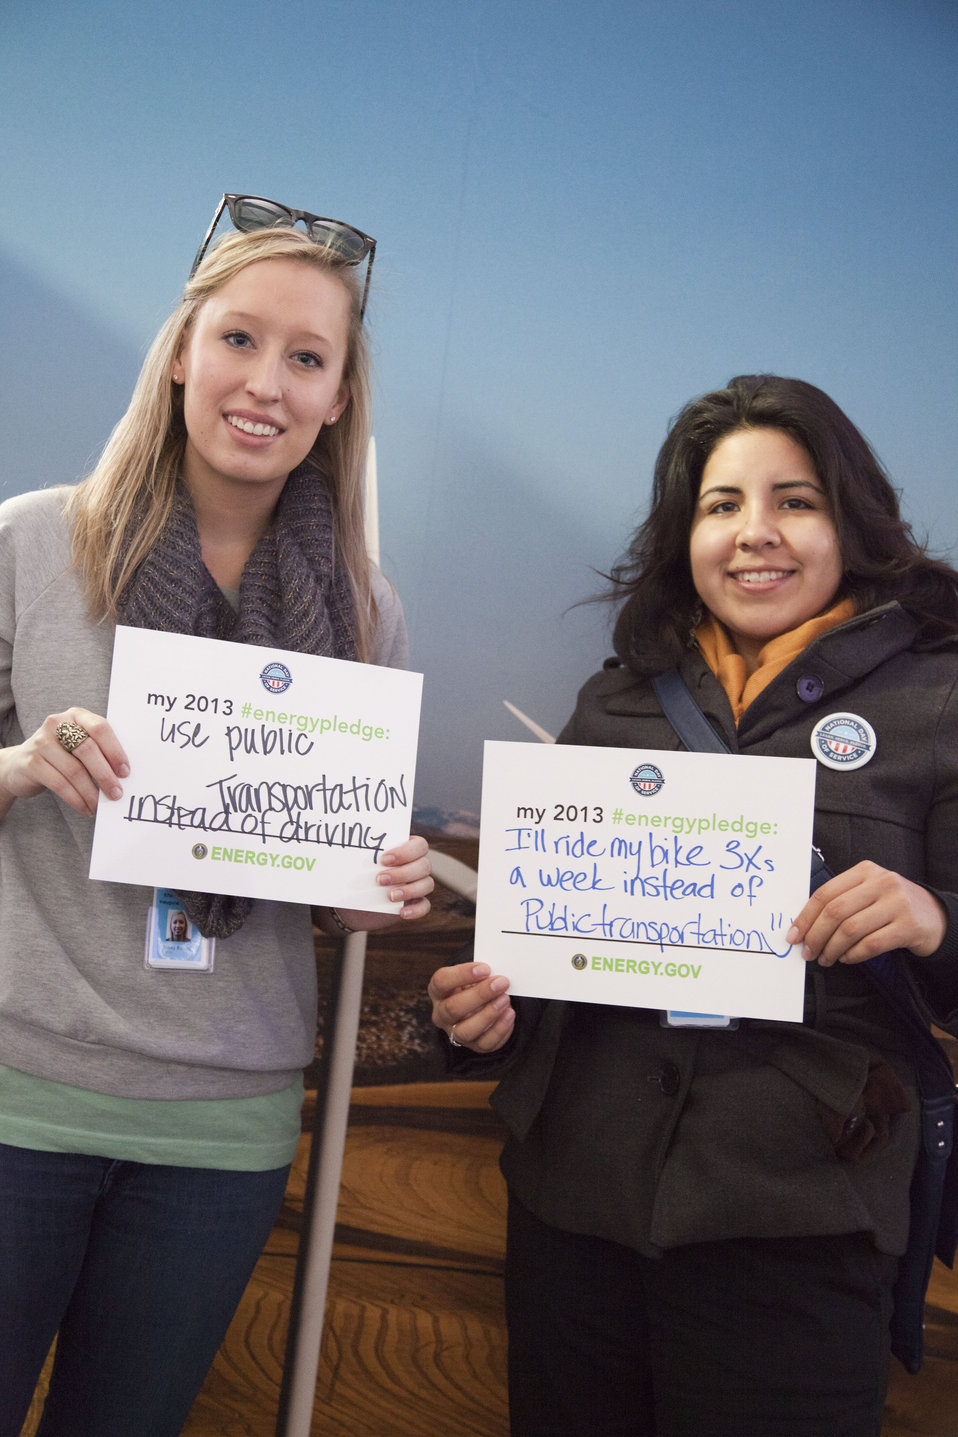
What's your #energypledge?